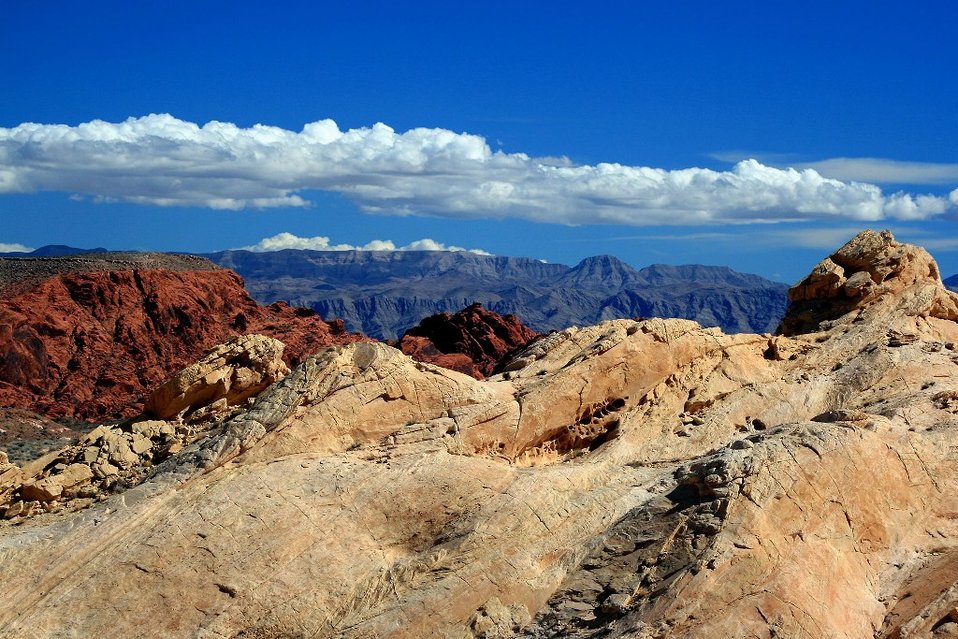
Uploaded by request of Ron Hosler

Taken in Valley of Fire State Park, Nevada

Taken on a beautiful sunny spring-like day in February 2008. Valley of Fire State Park is a great example of why we need to protect and enjoy our environment.